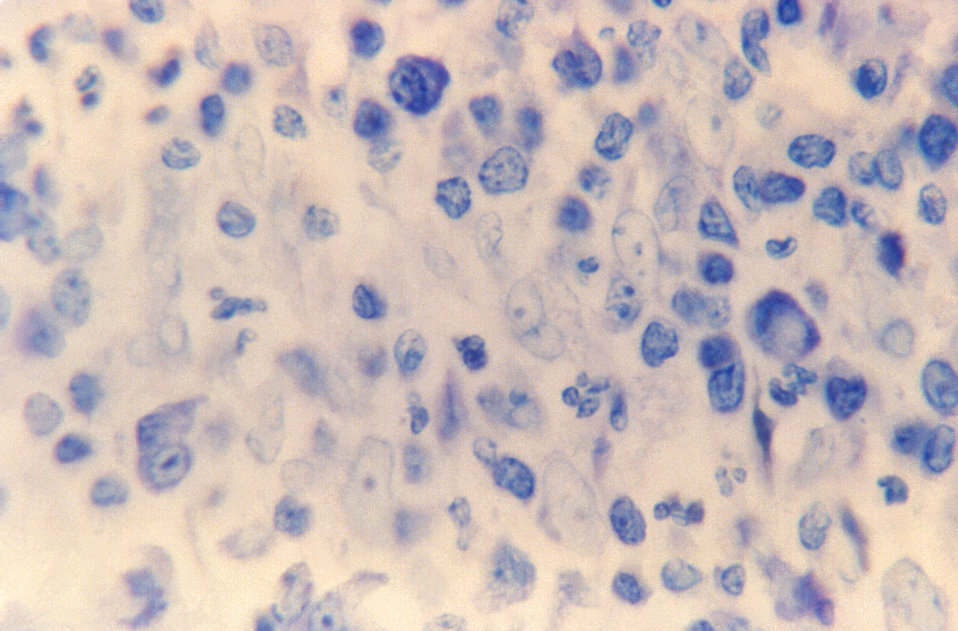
This photomicrograph reveals 'Donovan bodies' in a tissue sample used to diagnose granuloma inguinale.